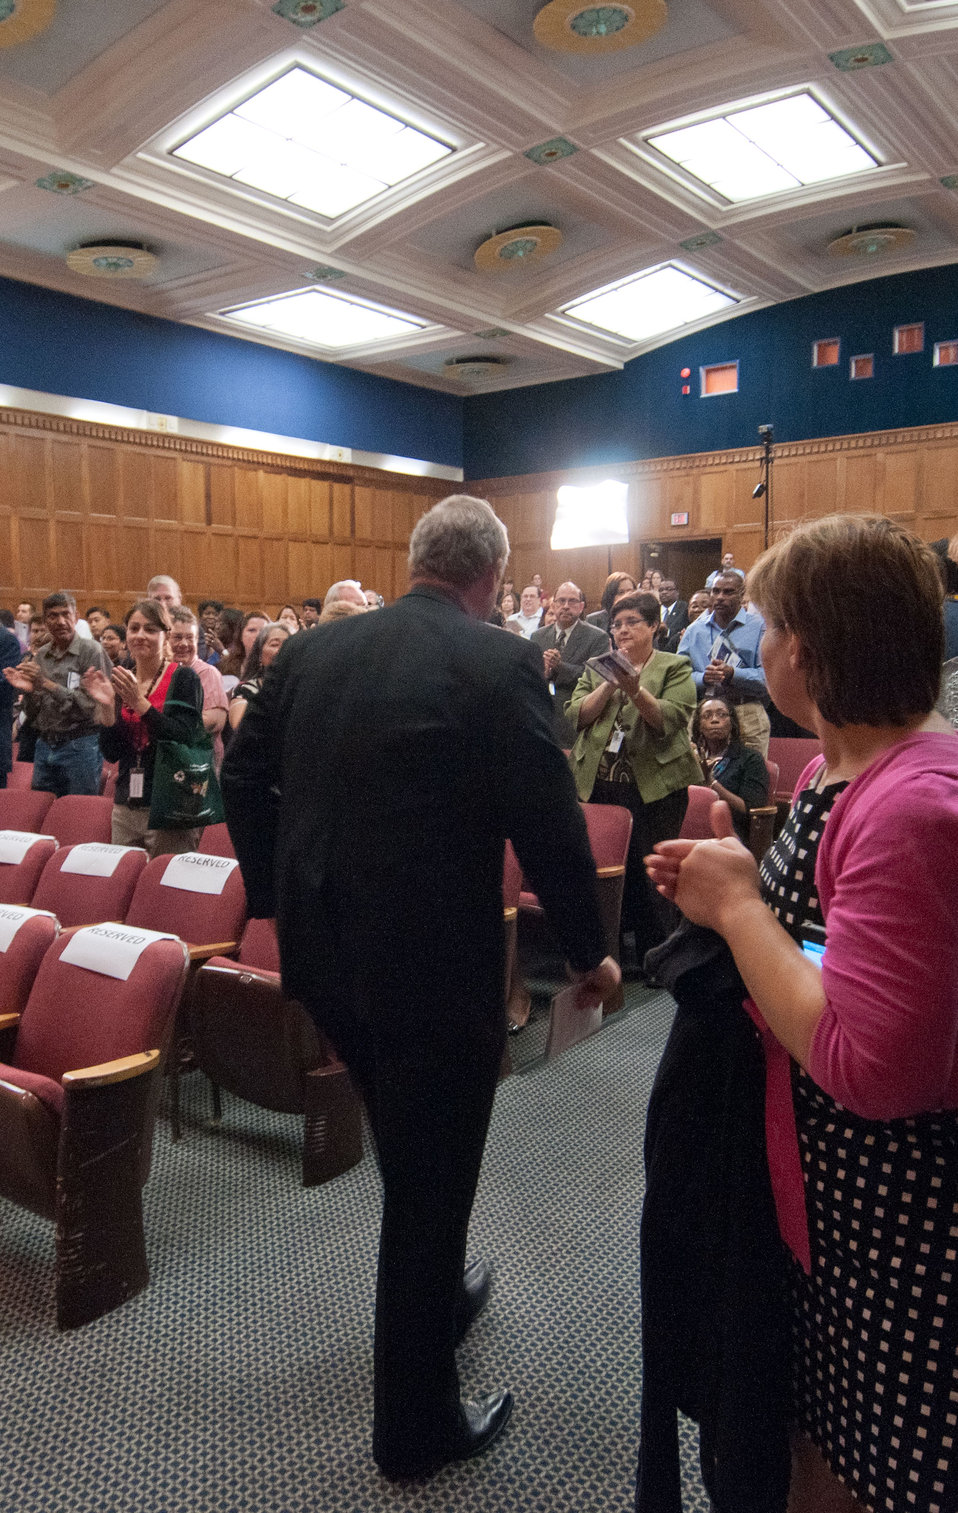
Agriculture Secretary Tom Vilsack receives a standing ovation as he departs the Jefferson after his keynote address for National Hispanic Heritage Month at the United States Department of Agriculture (USDA), in Washington, D.C. on Thursday, September 15, 2011.